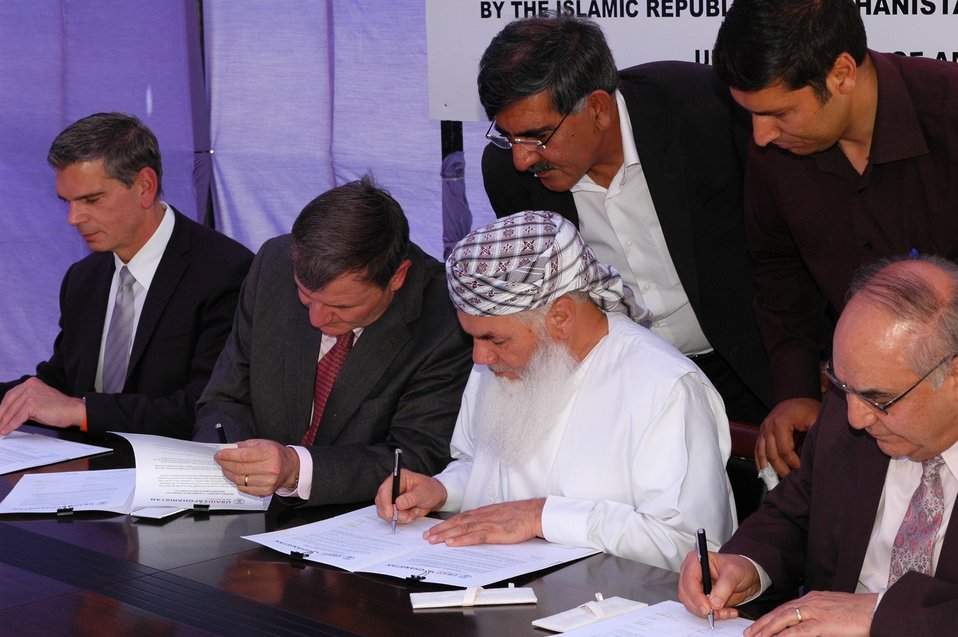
105 MW Tarakhil Power Plant Handover